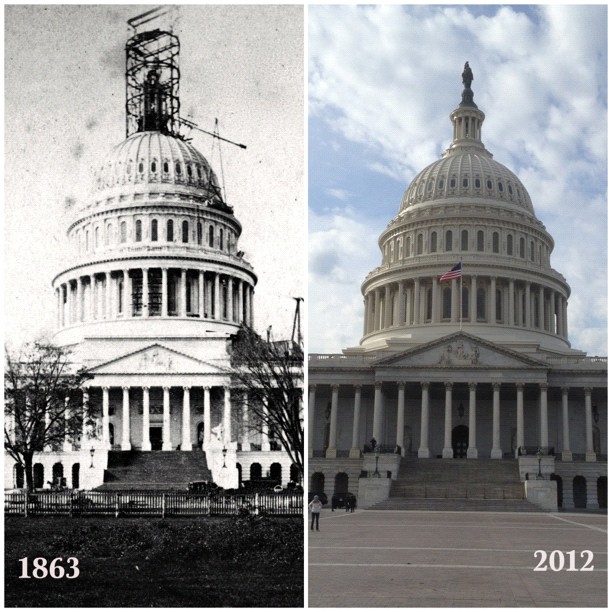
Happy 149th Birthday of Freedom atop Capitol Dome this Sunday.